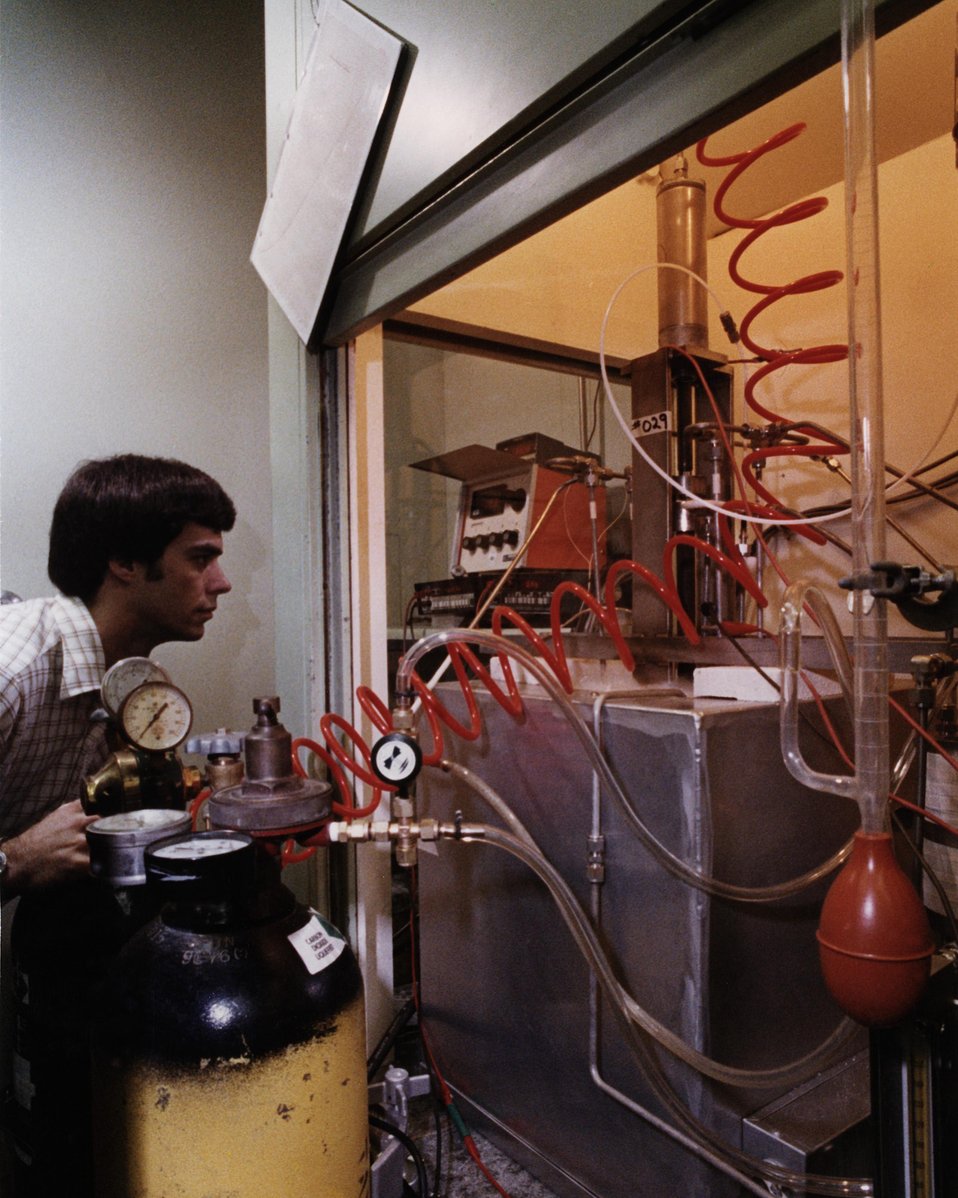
MOLTEN CARBONATE FUEL CELL BEING TESTED.

A NEWER METHOD OF COMMERCIALLY GENERATING ELECTRICITY IS BEING DEVELOPED BY GENERAL ELECTRIC. FUEL CELLS, BATTERY-LIKE GENERATORS, PRODUCE ELECTRICITY BY AN ELECTROCHEMICAL RE- ACTION. UNLIKE THE BATTERY, THE FUEL CELL HAS A CONSTANT SOURCE OF FUEL. IN THIS PROGRAM, G.E. IS PLANNING TO USE GASIFIED COAL TO POWER THE CELLS. THIS HYDROGEN-RICH FUEL IS FED INTO ONE SIDE OF THE CELL WHILE OXYGEN IS FED INTO THE OTHER. THIS CREATES A NEGATIVE CHARGE AT THE HYDROGEN (ANODE) SIDE AND A POSITIVE CHARGE AT THE OXYGEN (CATHODE) SIDE. THE ATTRACTION OF THESE CHARGES CAUSES THE ELECTRONS TO FLOW THROUGH THE MOLTEN CARBONATE ELECTROLYTE. THIS MOVEMENT OF THE ELECTRONS CREATES THE ELECTRICITY. BECAUSE THE MOLTEN CARBONATE FUEL CELL HAS A HIGH OPERATING TEMPERATURE, IT CREATES EXCESS HEAT WHICH CAN BE USED TO POWER OTHER ELECTRIC GENERATORS.